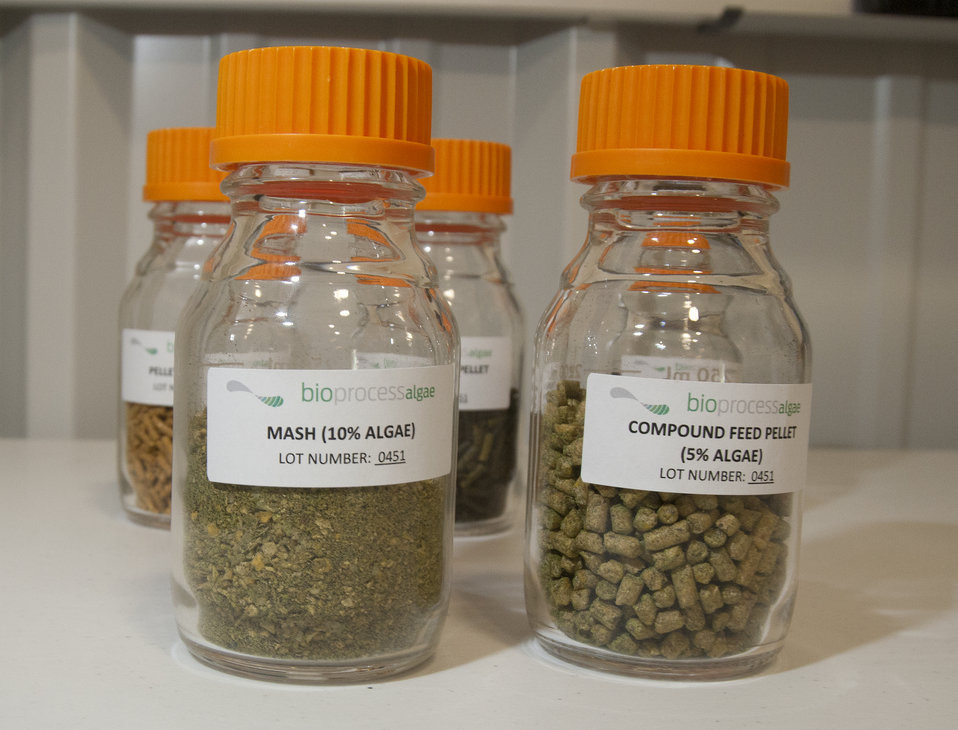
These are samples of animal feed produced from algae. Algae are high in quality protein, vitamins and other vital compounds that add value to animal feeds. Many species of algae produce large quantities of omega-3 fatty acids that are believed to beneficial for cardiovascular systems, immune systems, and cognitive development. Fish has long been the traditional source of omega-3s in human diets and now poultry feed can be enriched to produce omega-3 enriched eggs with algae. Agriculture Secretary Tom Vilsack toured the BioProcess Algae facility at Green Plains Renewable Energy (GPRE), Inc. on Friday, and Apr.15, 2011 in Shenandoah, IA that is producing such products.